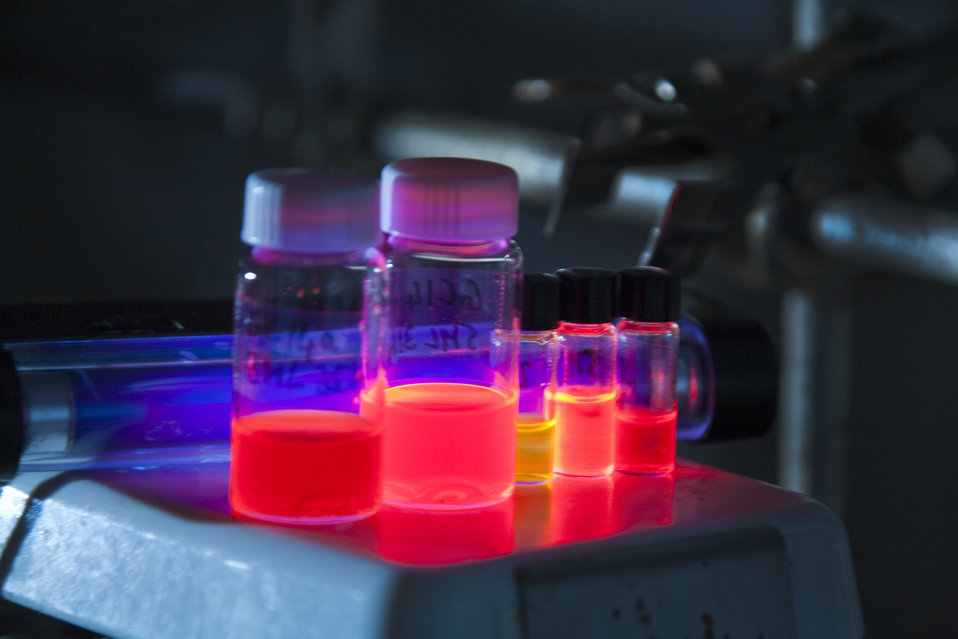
AT LOS ALAMOS, SHOWN ARE VIALS OF DIFFERENT-SIZE NANOCRYSTALS, EACH EMITTING LIGHT OF A DIFFERENT COLOR (ENERGY) THAT CORRESPONDS TO THE NANOCRYSTAL'S SIZE AND ENERGY GAP.